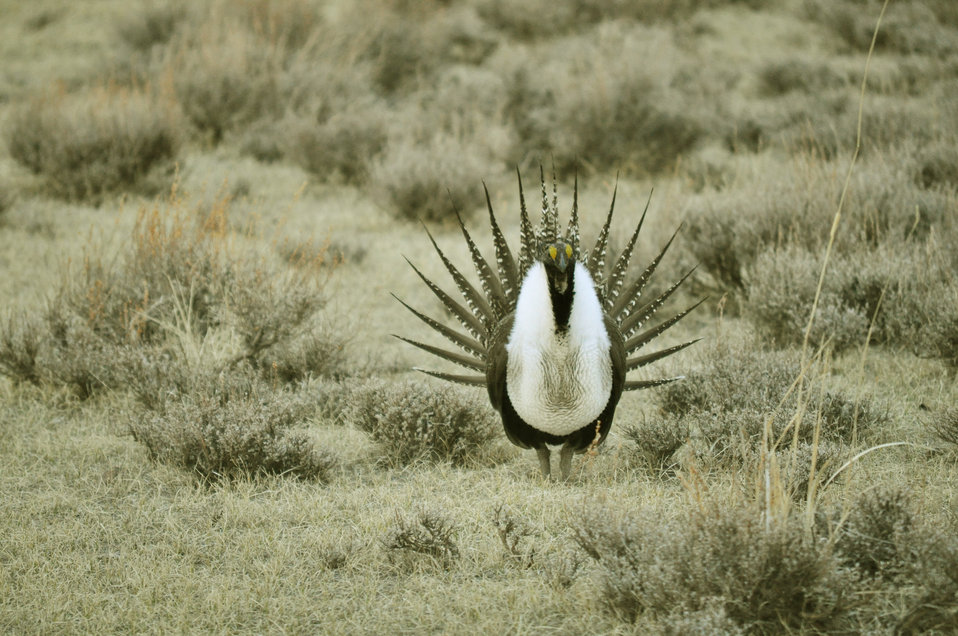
Male greater sage-grouse struts at lek (dancing or mating grounds) to attract females near Bodie, California.